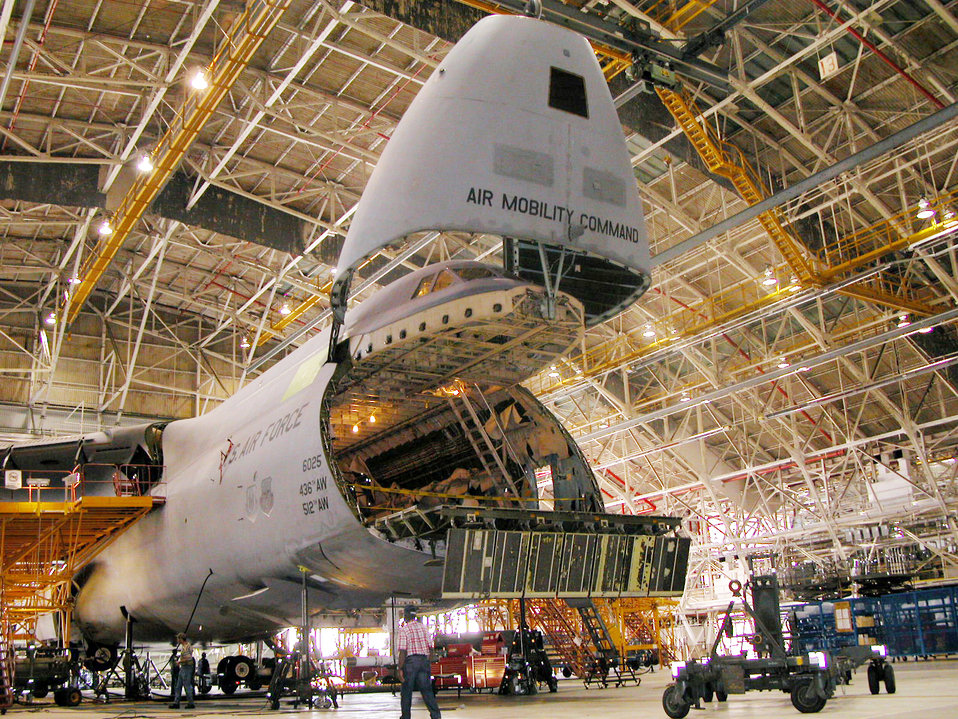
Stepping up airlift support

ROBINS AIR FORCE BASE, Ga. -- Strategic airlift directorate officials here are at the center of an ongoing effort to step up aircraft and parts production to support Air Mobility Command during the largest rotation of U.S. forces since World War II. The effort is scheduled to last several months.